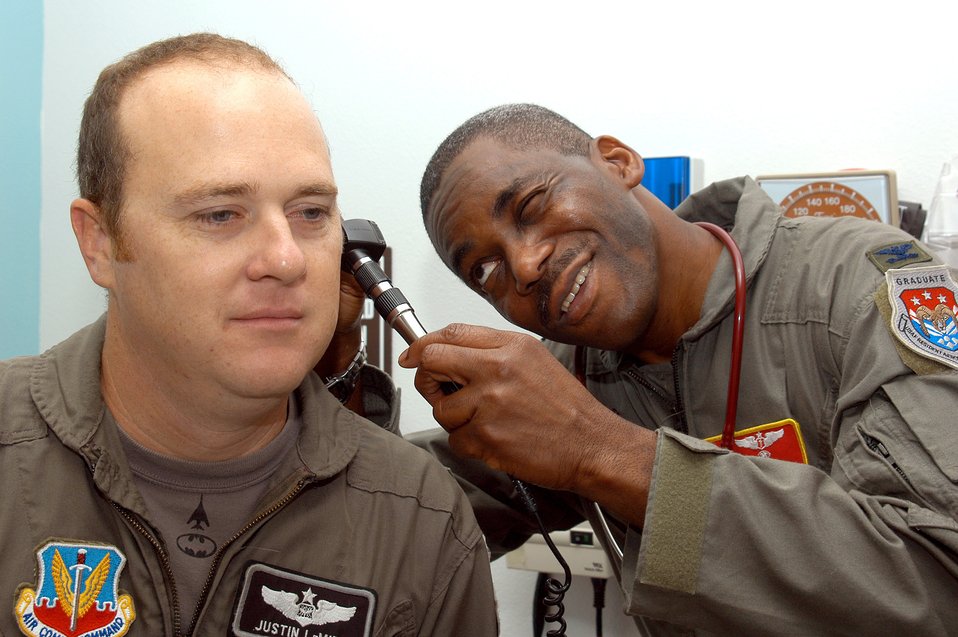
Airman keeps sight of dream despite obstacles

DYESS AIR FORCE BASE, Texas -- Col. (Dr.) Victor Folarin looks into Capt. Justin LeMire's ears during an examination. Dr. Folarin immigrated to the United States from Nigeria at 20 years old to become a doctor. Since then, he has earned five college degrees and has been an Air Force doctor since 1993. He is the outgoing commander of the 7th Aeromedical/Dental Squadron, and Captain LeMire is a 9th Bomb Squadron resource adviser.